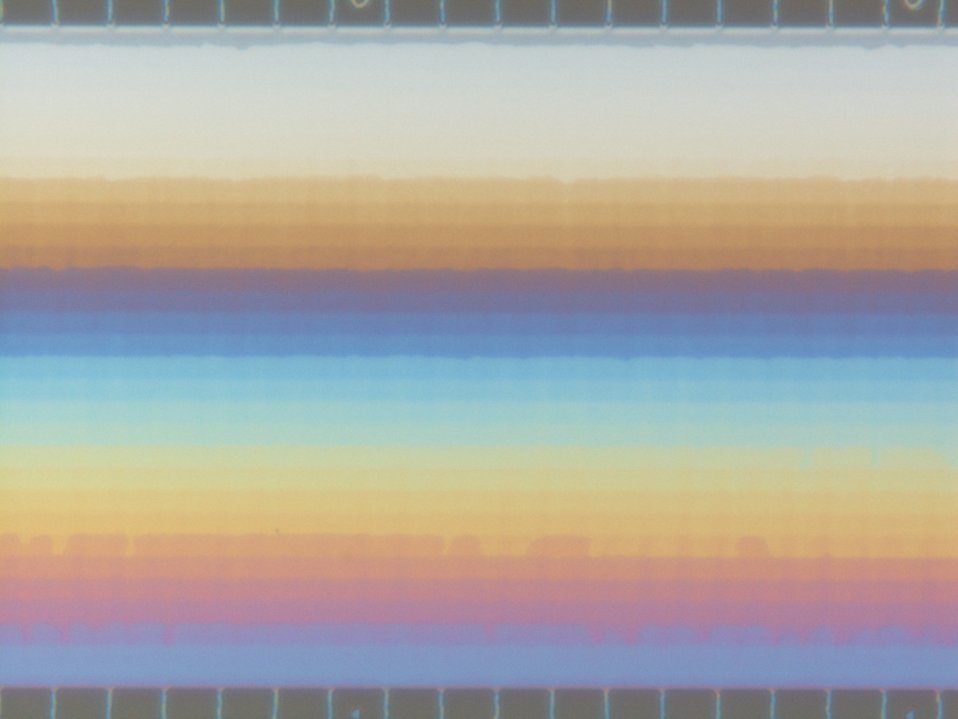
Nanofluidics; 3-D

Overhead view of the NIST-Cornell 3-D nanofluidic device showing the different depth levels within the chamber as horizontal bands. The deepest, at the bottom, measures about 620 nanometers (slightly smaller than an average bacterium), while the shallowest, at the top, is about 60 nanometers (1,000 times smaller than the width of a human hair). The colors of the bands result from different mixing of white light components (interference) at each depth.